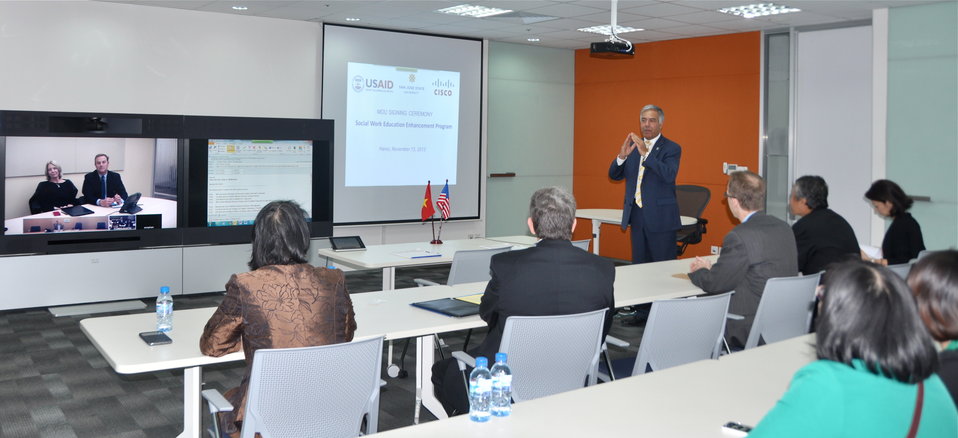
San Jose State University President Dr. Mohammed Qayoumi speaks at the MOU signing ceremony.

Hanoi, November 13, 2013.